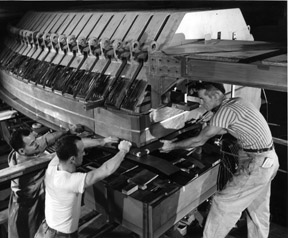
Installation of upper nose coil of main magnet winding. c. 1950